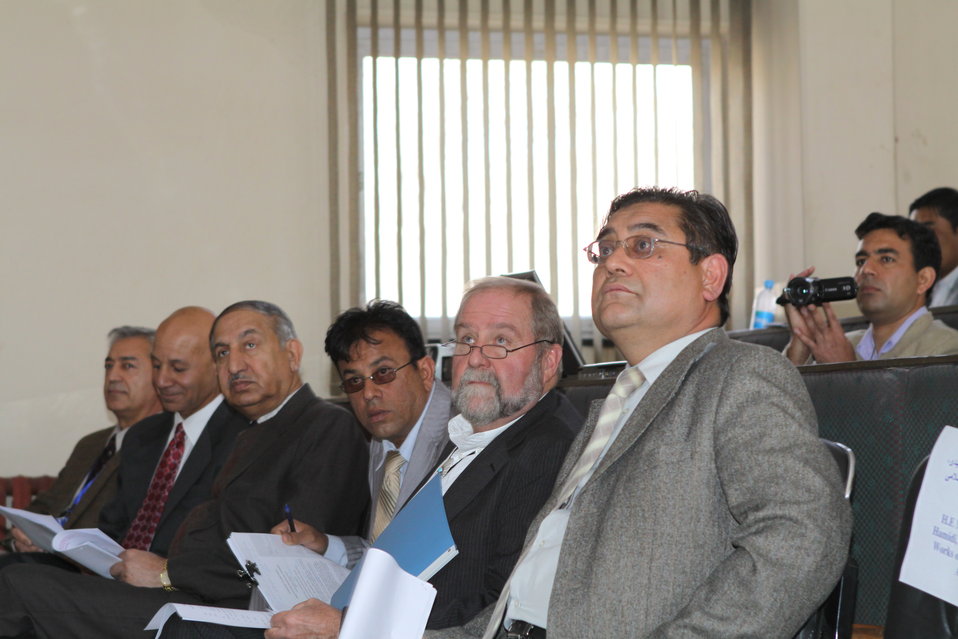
Female University Students Complete Internship

Kabul, Afghanistan | March 16, 2011 – In response to a demand for qualified Afghan engineers, Kabul University celebrated completion of an intensive five-month Mentor Protégé Training Program today by 10 female fourth year university students. The Training Program is a joint effort between the Government of the Islamic Republic of Afghanistan, the U.S. Agency for International Development (USAID), and the Universities of Kabul, Kandahar, Alberoony in Kapisa, Shiekh Zayed in Khost. The graduation ceremony highlighted collaboration with these national institutions in building the technical skills of young Afghans, made possible by USAID.

Four of the interns are engineers, while the remaining six are from the faculties of computer science, economics, and psychology.

Speaking about the event, H.E. Minister of Public Works Abdul Qudus Hamidi said, “The future of Afghanistan lies in developing the skills of our youth, and the engineering skills of these graduates today represent a small but important step forward for the country.”

Keynote speakers at the ceremony included H.E. Deputy Minister of Higher Education Abdul Rahim; USAID Senior Deputy Mission Director Robert Hellyer; and Chancellor of Kabul University Professor Hamidullah Amin. Approximately 150 people, including current and former students attended the graduation.

Launched last year, the Mentor Protégé Training Program has provided qualifying students the opportunity to intern with USAID’s Strategic Provincial Roads-South and East Afghanistan project and gain practical experience in a real work environment. The goal of the program was to offer interns the opportunity to gain hands-on experience to reinforce their formal studies. A total of 30 students from four national universities have benefitted from this program.

“The promotion of women’s rights is integrated into the overall U.S. Government development strategy and can be found in key programs, including education, healthcare, security, rule of law, political participation, agriculture, and economic development,” said Robert Hellyer. “The U.S. Government is committed to the Afghan leadership of programs that directly enhance development, particularly as it relates to women’s issues.”

This event also highlighted the learning achievements of students and emphasized the importance of hands-on internship programs. The curriculum is designed to instill students with the knowledge and confidence to qualify for engineering positions upon completion of their fourth year at their respective universities.